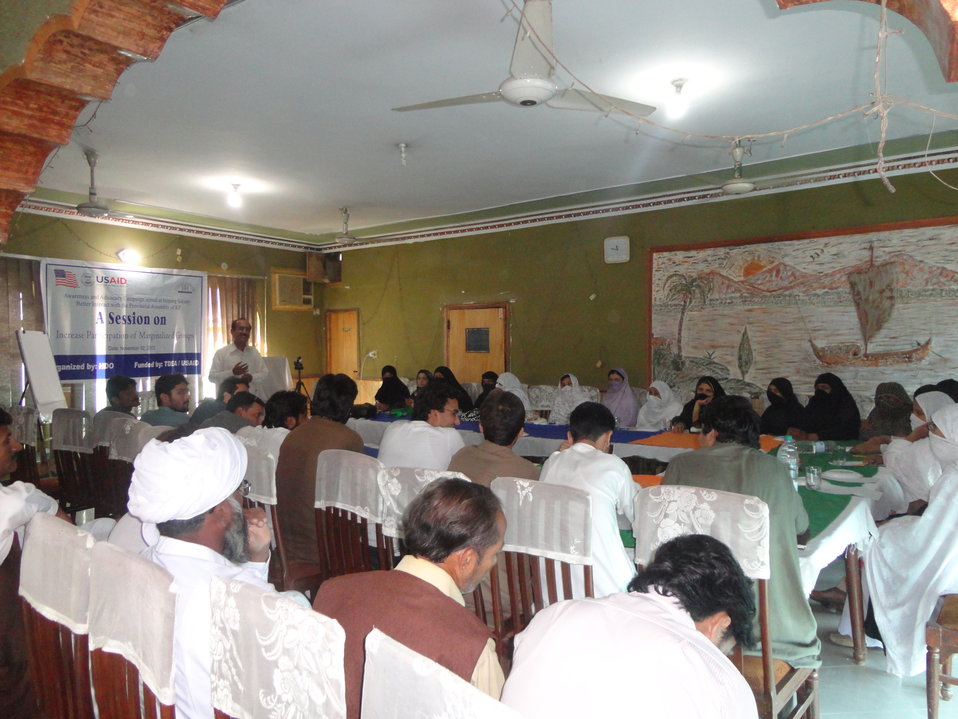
Caption 14 - HamdamDO - KP - Increasing Participation of the Marginalized - Sesson on Citizen Engagement

Hamdam Development Organization (HDO) is implementing a project on Legislative Governance in Khyber Pakhtunkhwa under USAID Citizens’ Voice Project. Here, we can see a session in progress on increasing participation of the marginalized community in the process of interacting with the provincial legislators.